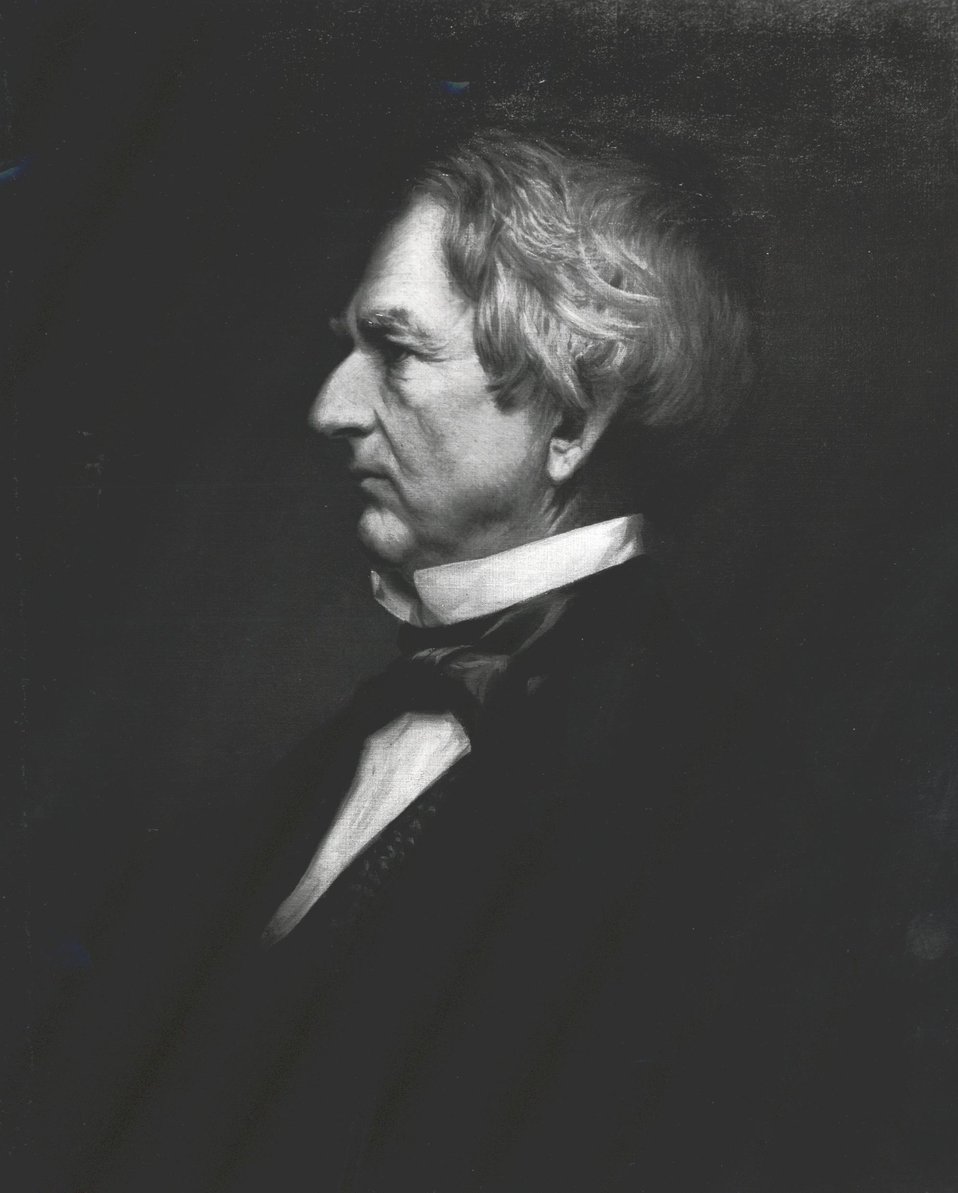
William H. Seward, U.S. Secretary of State, March 6, 1861 to March 4, 1869